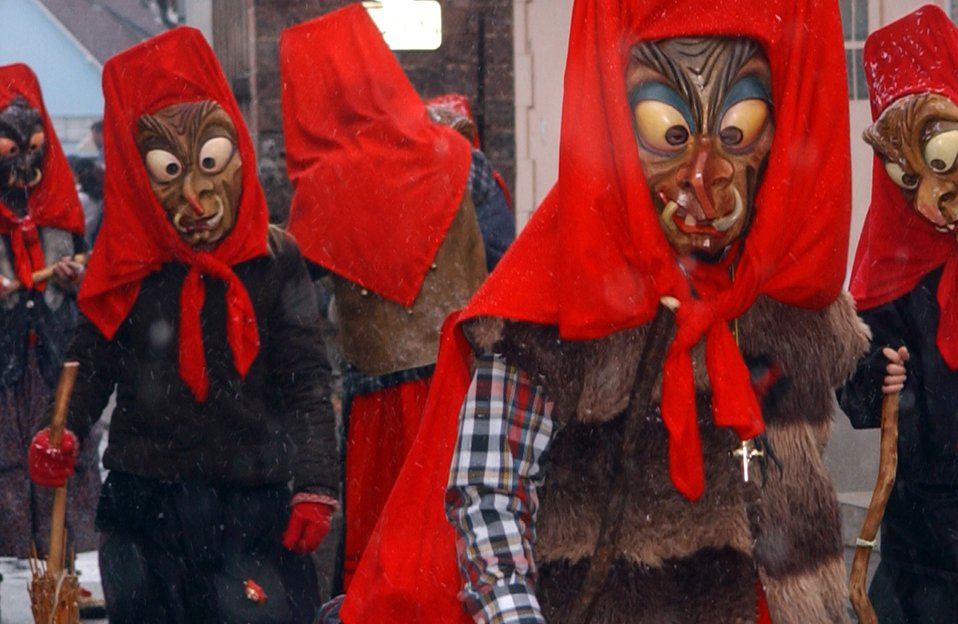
Locals dress up to celebrate the Fasching Parade in Ramstein Village, Germany, on Tuesday, Feb. 28, 2006. The parade was initially named and reserved for the Tuesday before Ash Wednesday.